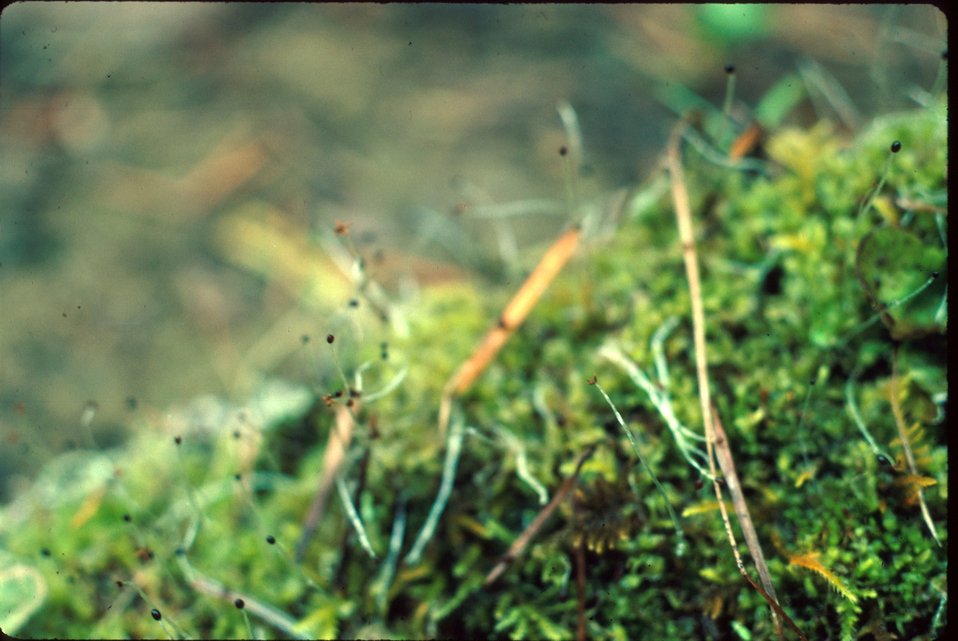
Hornwort Liverwort, bryophyte